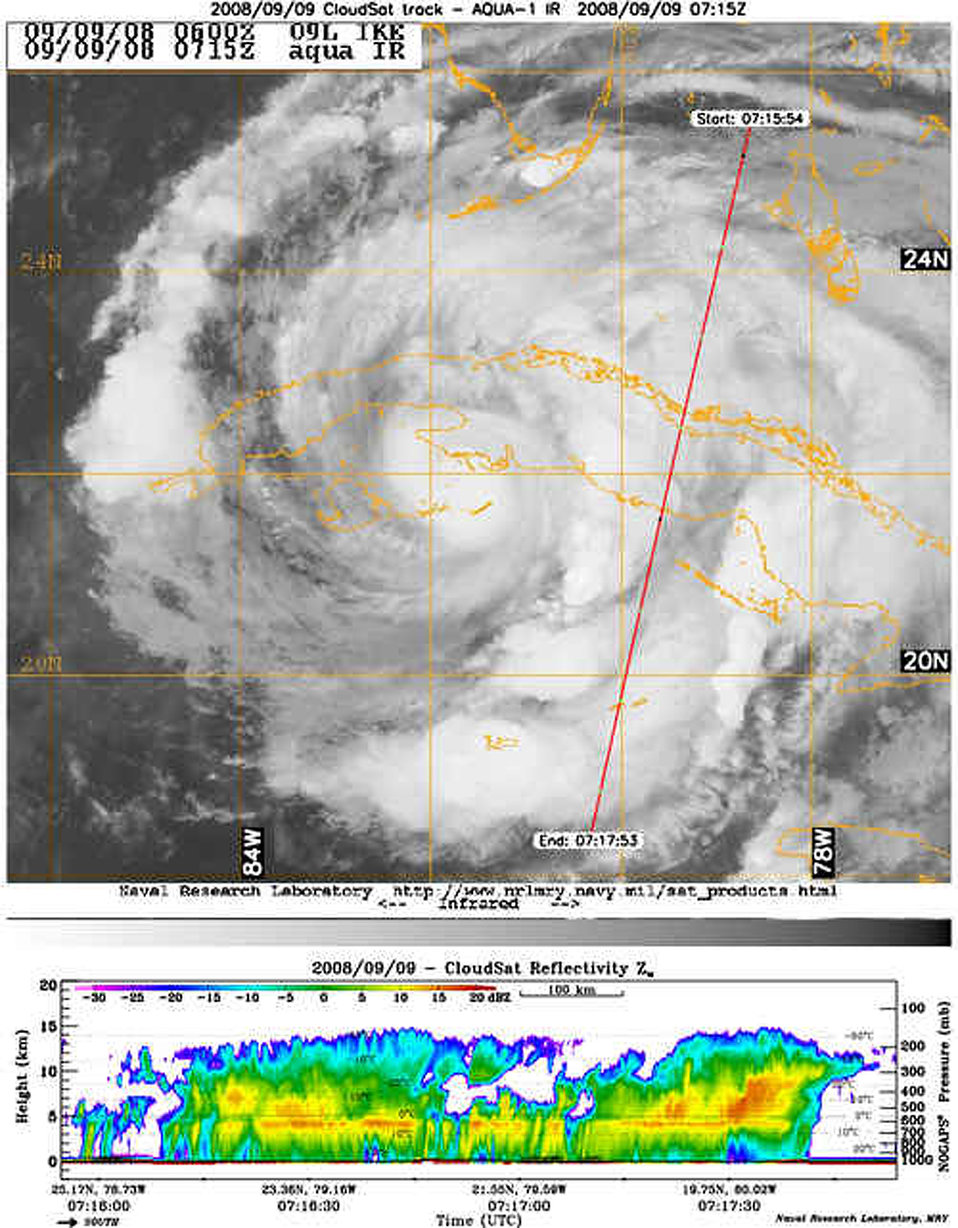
CloudSat Captures Ike's Arm's Length from the Side